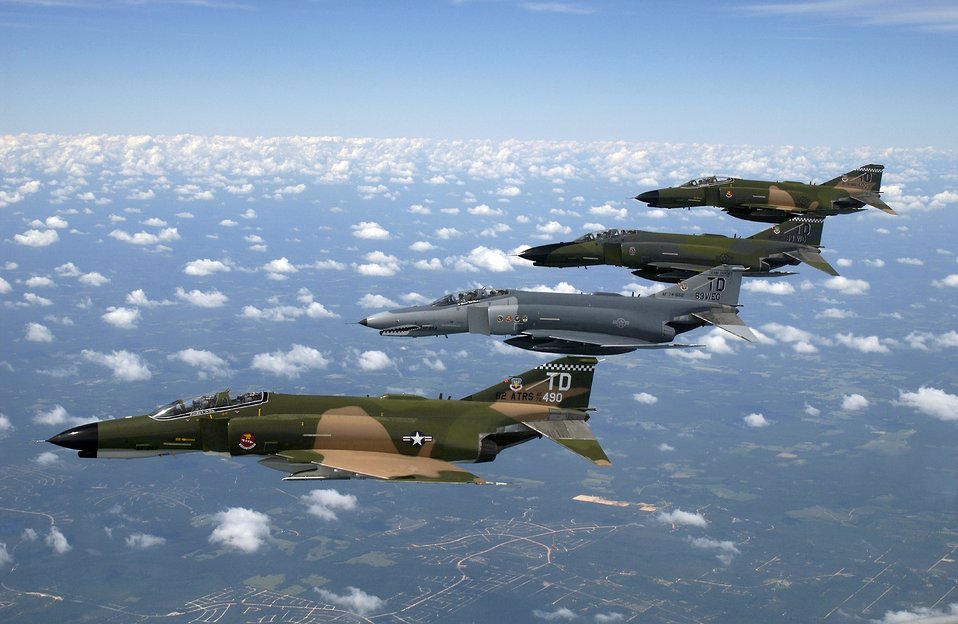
Flight demonstration

OVER FLORIDA -- A formation of F-4 Phantom II fighter aircraft fly in formation during a heritage flight demonstration here. The heritage flight program was established in 1997 to commemorate the 50th Anniversary of the U.S. Air Force.